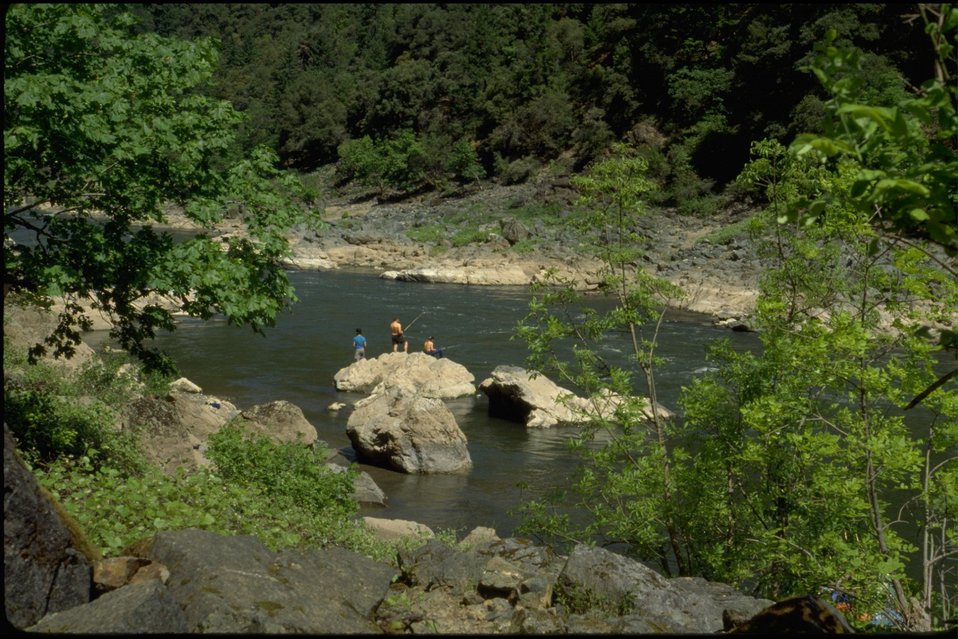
Rogue River - Just below Rainie Falls, South side of river, wild section. Children fishing.